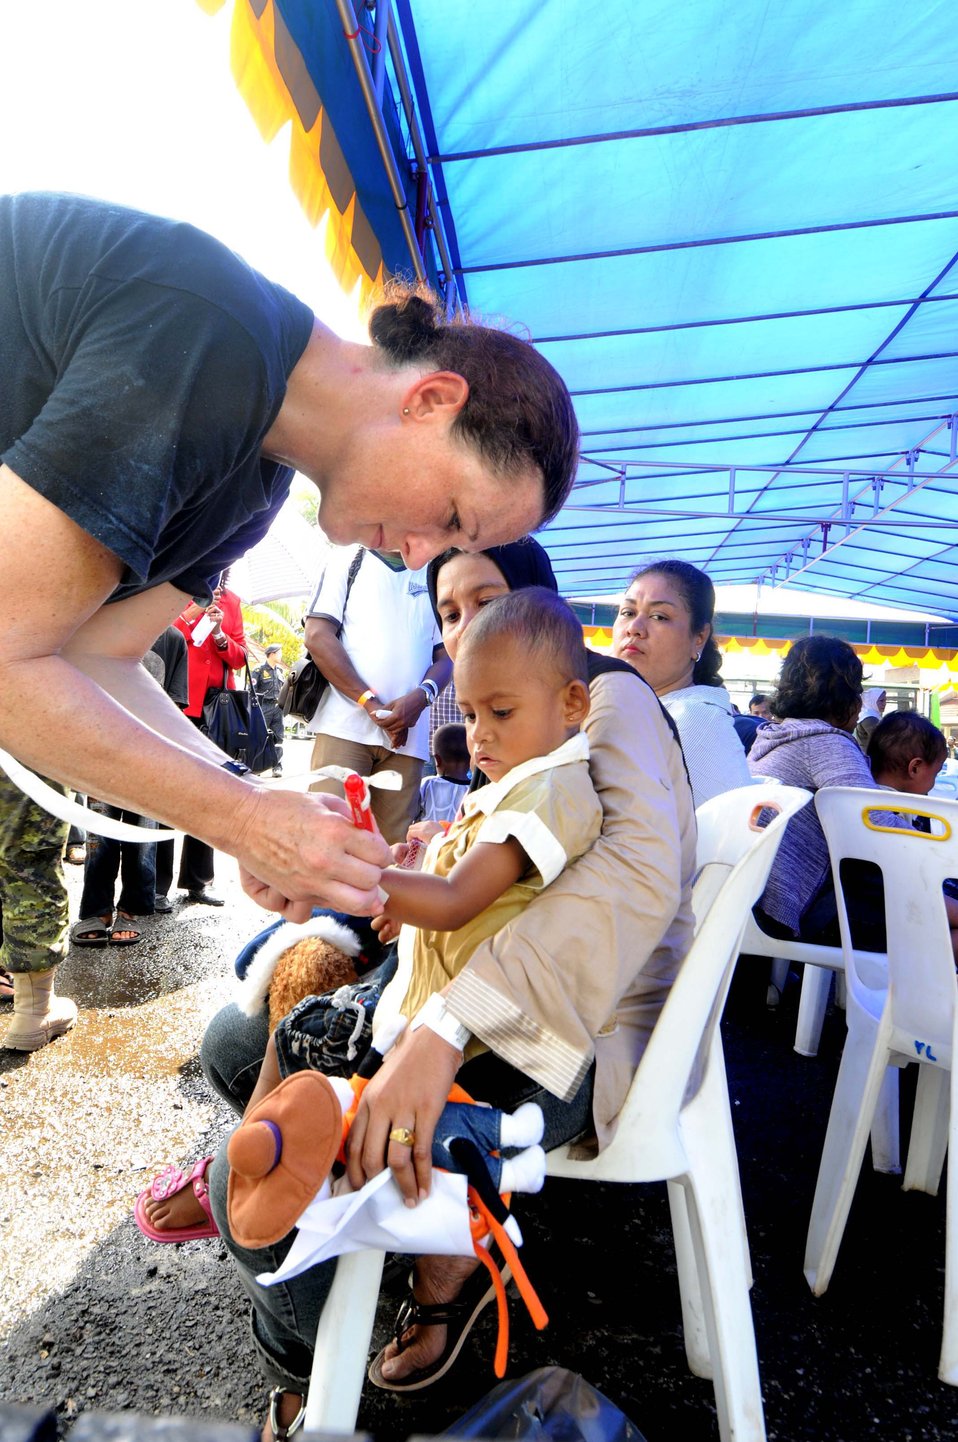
Lt. (Dr.) Anne Jarret Completes an Ear Examination of a Young Indonesian Patient

Lt. (Dr.) Anne Jarret, an audiologist from the Military Sealift Command hospital ship USNS Mercy (T-AH 19), completes an ear examination of a young Indonesian patient during a medical civic action program in Abmon, Indonesia, on July 27, 2010. The Military Sealift Command hospital ship USNS Mercy (T-AH 19) is in Ambon participating in Sail Banda 2010, a series of events hosted by the Government of Indonesia to promote the future of small islands. Mercy’s participation features medical and dental care clinics and construction projects in and around Ambon, as well as on Seram Island.